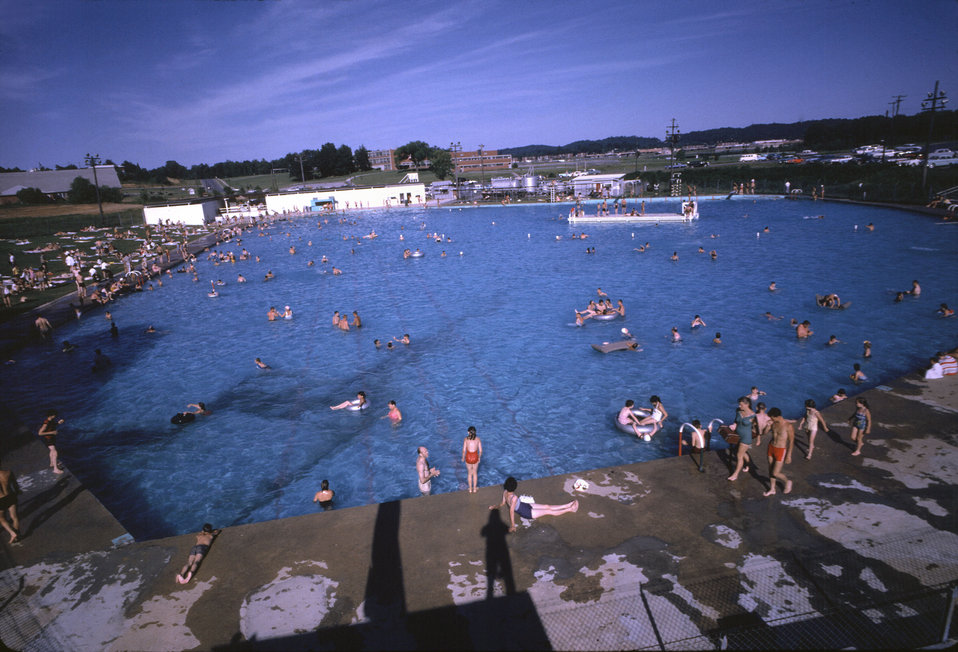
Overall View of Oak Ridge Pool

DOE photo by Ed Westcott

Overall View of Oak Ridge Pool Oak Ridge tennessee July 1961